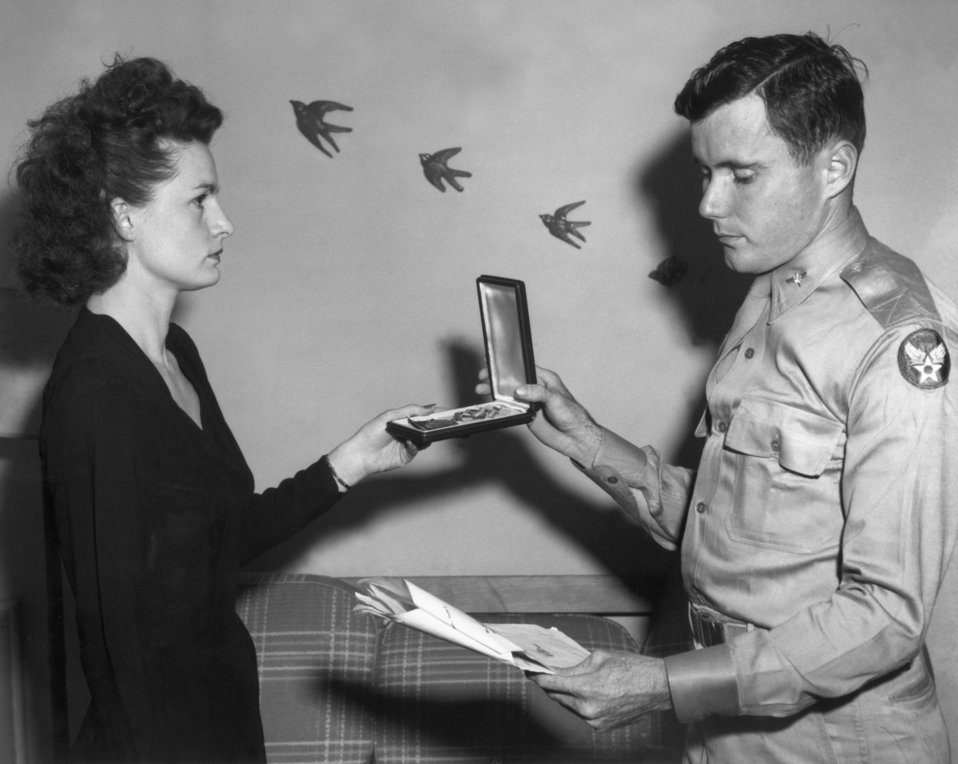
Air Medal and Oak Leaf Cluster Awarded Posthumously

PRO664-2 DOE photo by Ed Westcott

Air Medal and Oak Leaf Cluster Awarded Posthumously to SGT. Jasper J. Richardson. Mrs. Richardson, A Tennessee Eastman company employee, receives the award from Lt. James E. Thornton, U.S. Army Air Force 6/7/45